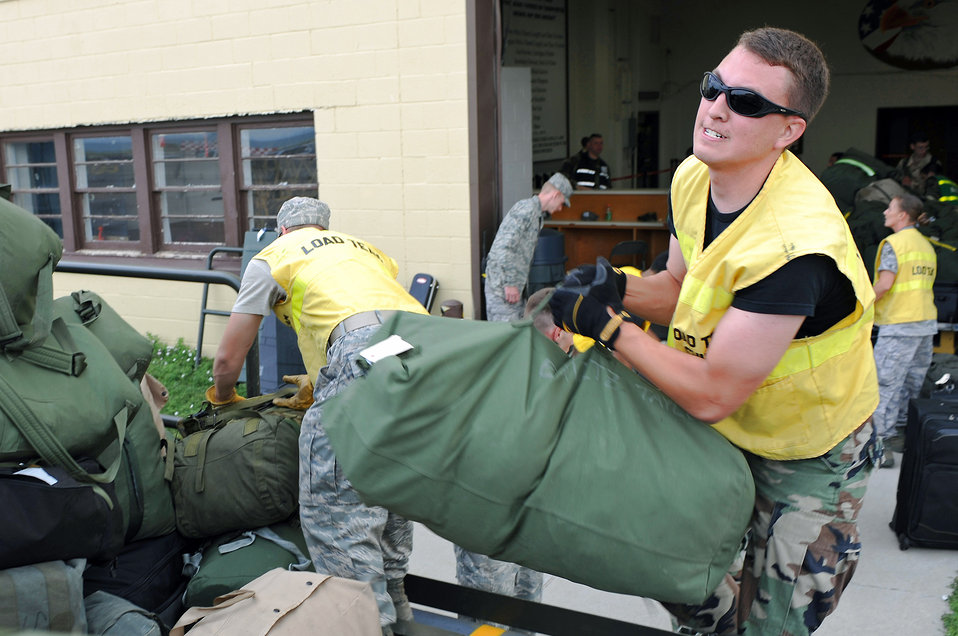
Parting is such sweet sorrow

Staff Sgt. Jerry Simmons loads personal and mobility bags of deploying personnel July 22 at Ellsworth Air Force Base, S.D. More than 200 Ellsworth AFB Airmen deployed in support of military operations being conducted in various locations worldwide. Sergeant Simmons is a 28th Civil Engineer Squadron electrical systems craftsman.